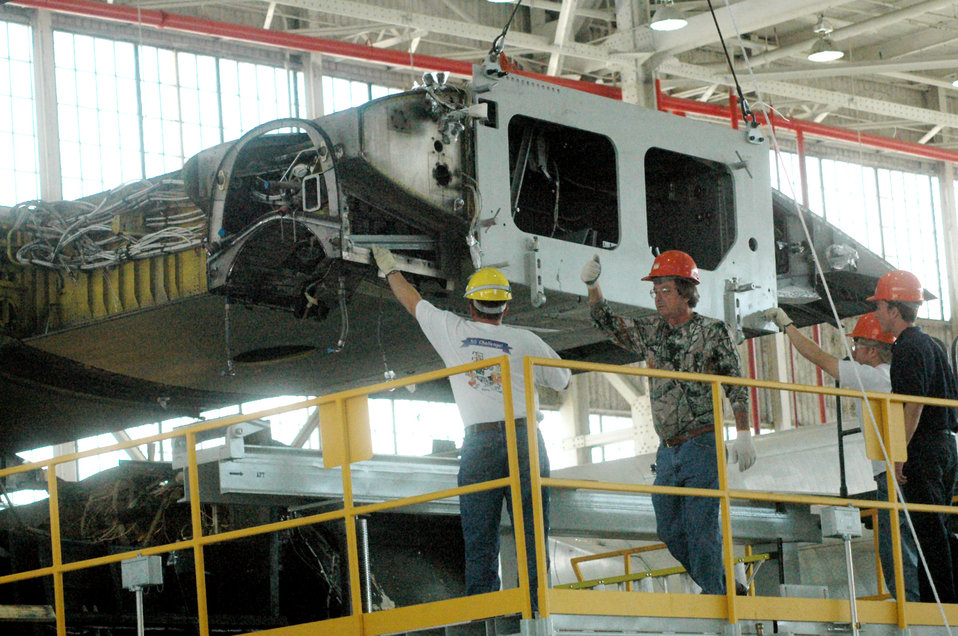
Air logistics center upgrades center wing boxes on C-130s

Workers guide the center wing box as it is lifted from a C-130 Hercules. A three-phase project is under way at Warner Robins Air Logistics Center, Robins Air Force Base, Ga., to replace the center wing boxes in all C-130 models except the C-130J.